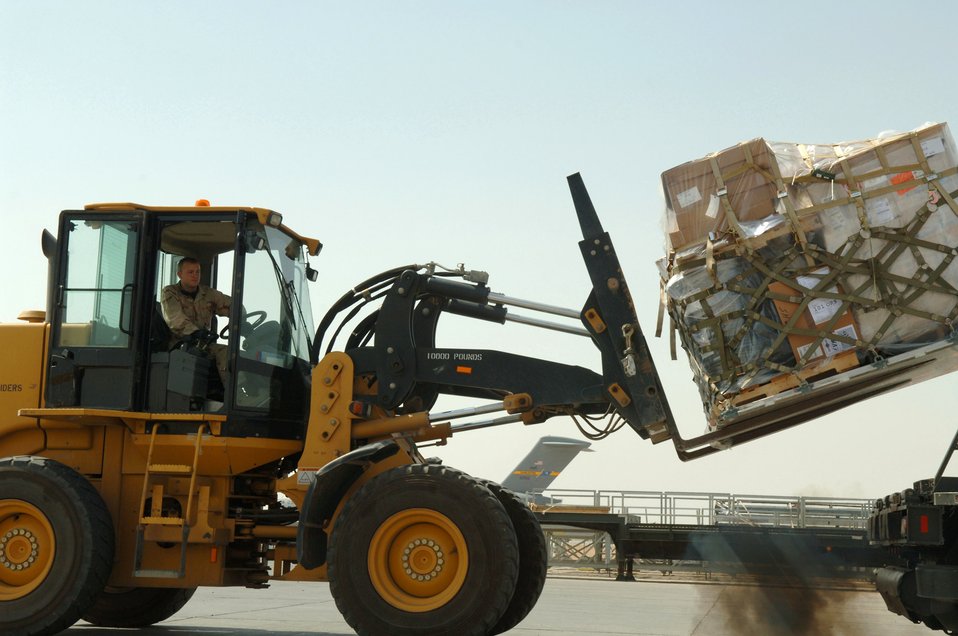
Balad's busy aerial port supports, supplies the fight

Air transportation specialist Airman 1st Class Brenten Chrans uses a 10K adverse terrain forklift to download cargo from a 60K aircraft loader for in processing March 14 at Balad Air Base in Iraq. Airman Chrans is with the 332nd Expeditionary Logistics Readiness Squadron Aerial Port Flight.